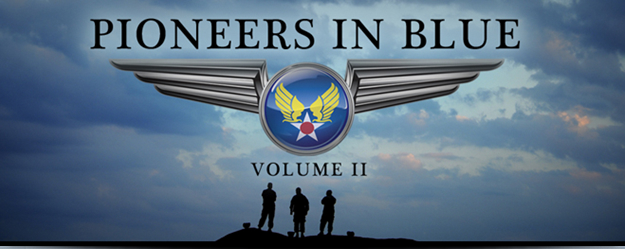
Pioneers in Blue